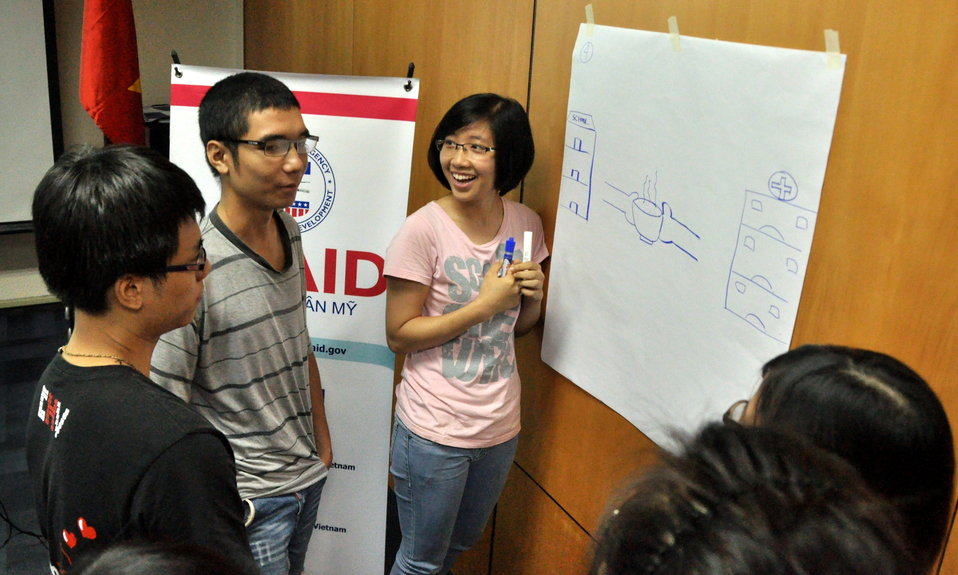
International Youth Day 2013: USAID hosts a lively discussion and group exercise on how youth can join in to advance development687

Hanoi, August 12, 2013.